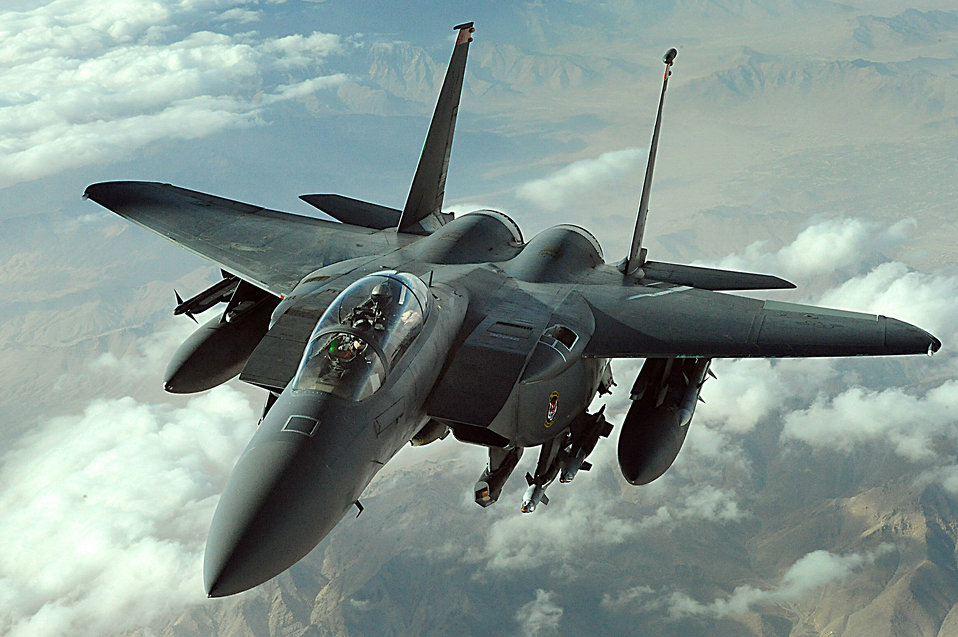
F-15Es support coalition forces

An F-15E Strike Eagle flies over Afghanistan. The F-15E is a dual-role fighter designed to perform air-to-air and air-to-ground missions as well as provide armed aerial overwatch. The aircraft is assigned to the 391st Expeditionary Fighter Squadron from Bagram Airfield, Afghanistan.